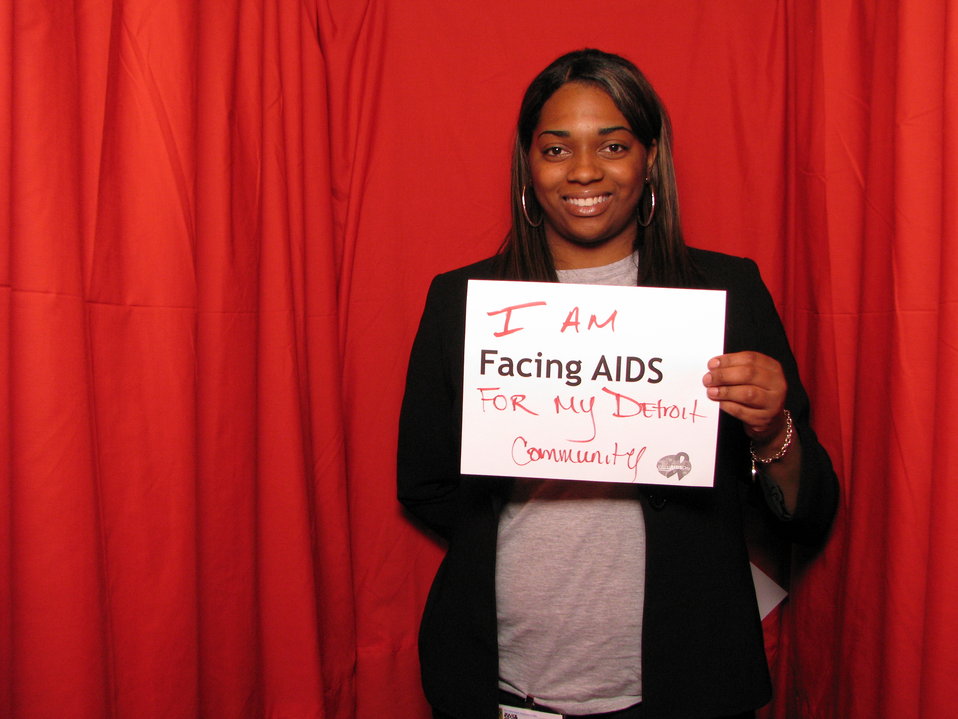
I AM FACING AIDS for my Detroit community!

From the AIDS.gov photo booth at the U.S. Conference on AIDS, September 2010 (Orlando, FL).